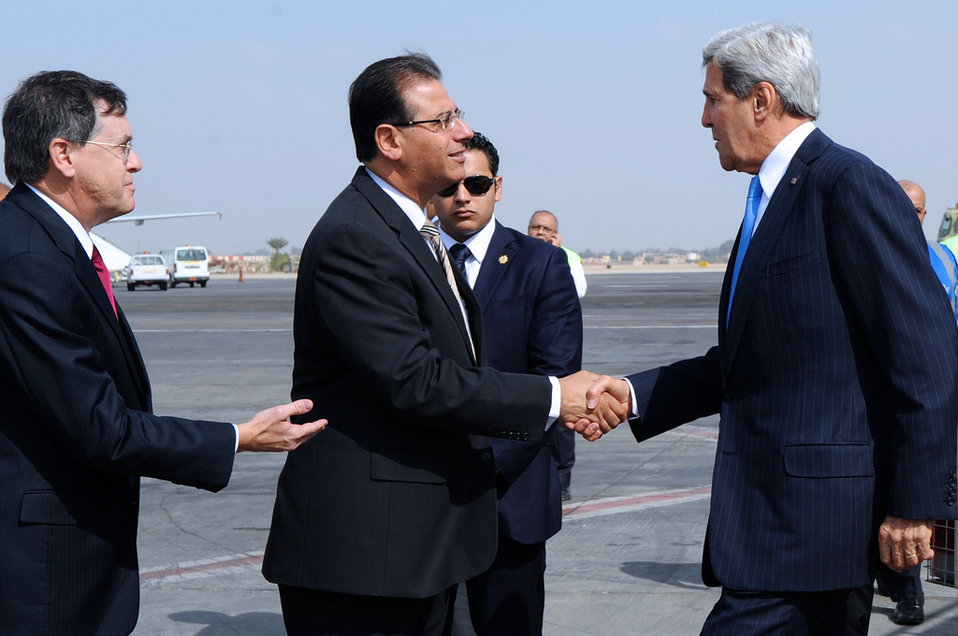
Secretary Kerry Is Greeted By Charge Satterfield and Egyptian Chief Of Protocol Munib

U.S. Secretary of State John Kerry, introduced by U.S. Chargé d'Affaires David Satterfield, meets Egyptian Chief of Protocol Ambassador Farid Munib upon arrival for meetings with government officials in Cairo, Egypt, on November 3, 2013.